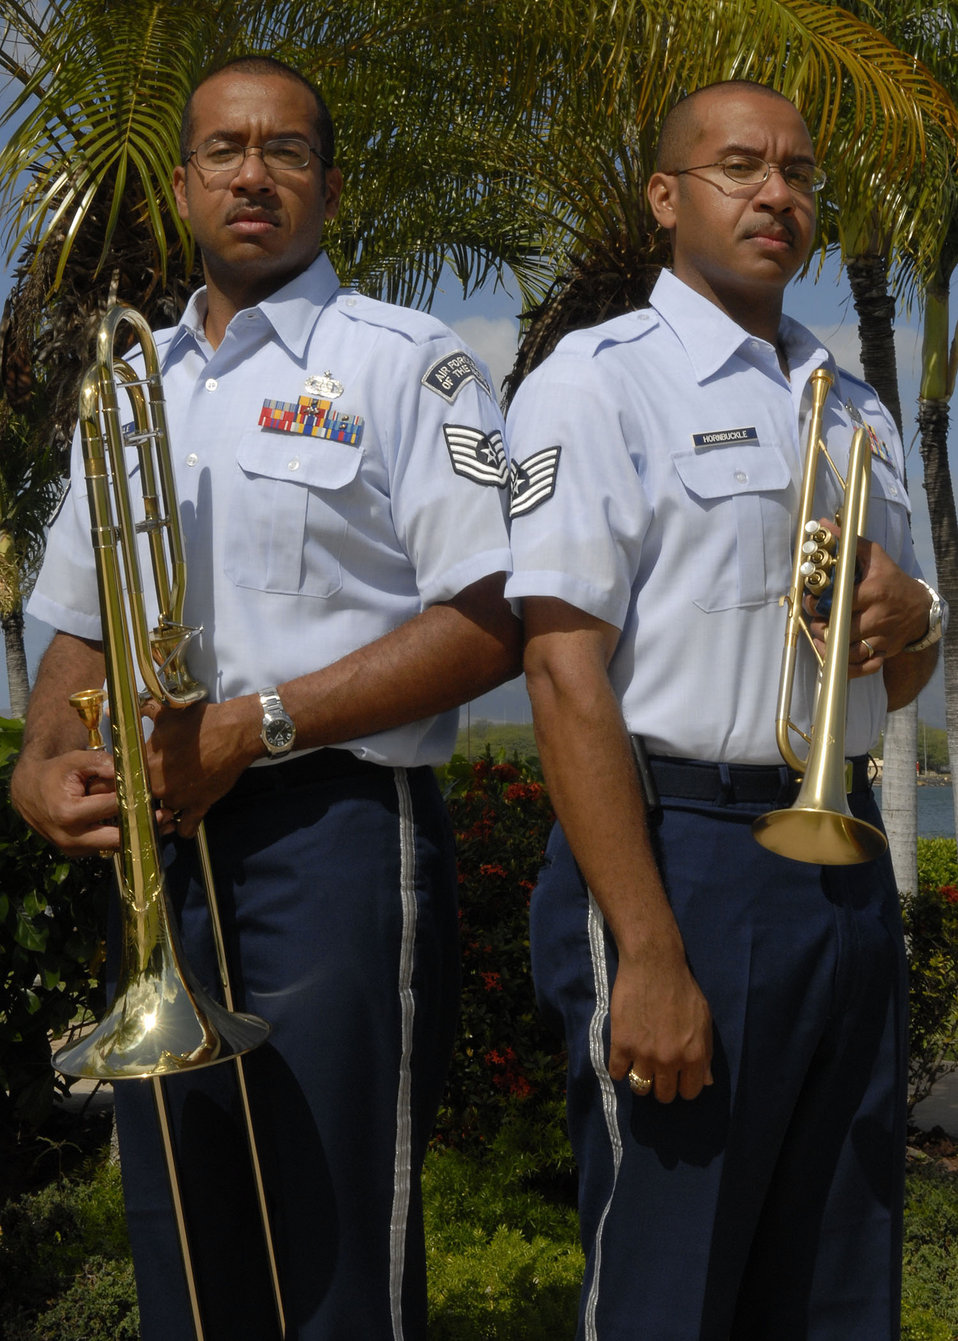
Dynamic Duo: Twin brothers share love of music, Air Force

Tech. Sgt. Brian Hornbuckle and his identical twin brother Tech. Sgt. Michael Hornbuckle joined the Air Force together as bandsmen. Sergeant Brian Hornbuckle is a trumpet player and Sergeant Michael Hornbuckle is a trombone player with the Band of the Pacific at Hickam Air Force Base, Hawaii.